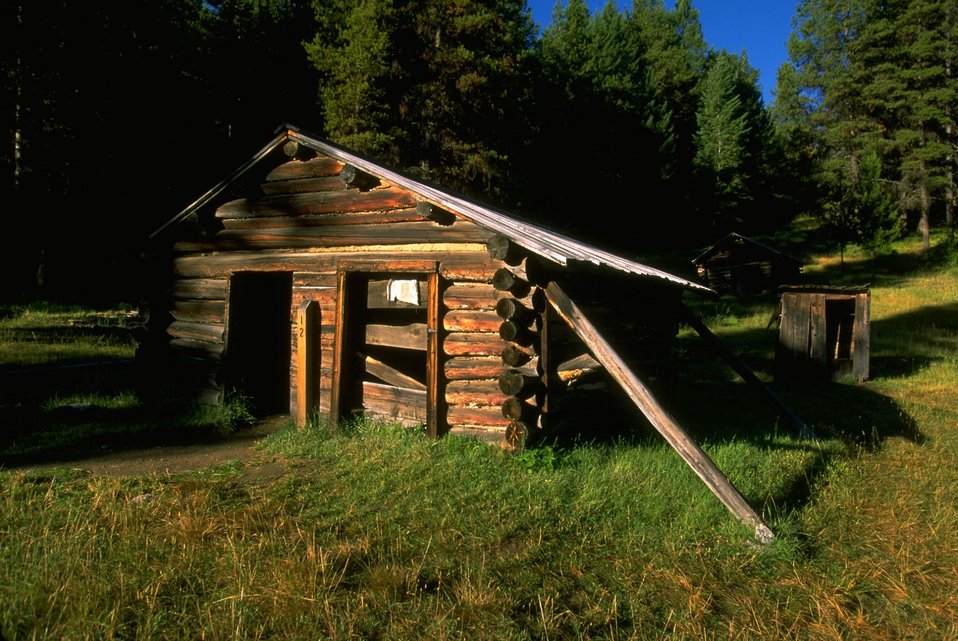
Garnet Ghost Town--bracing historic building